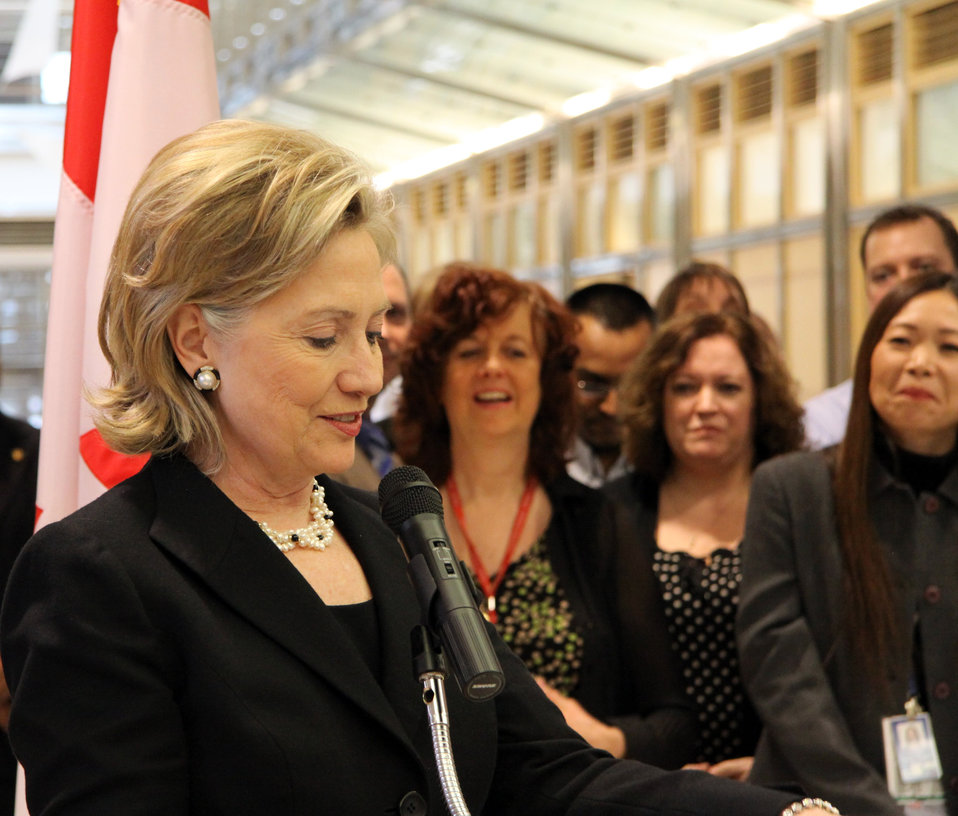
Secretary Clinton Visits U.S. Embassy in Ottawa

U.S. Secretary of State Hillary Rodham Clinton visits the U.S. Embassy in Ottawa, Canada March 29, 2010.